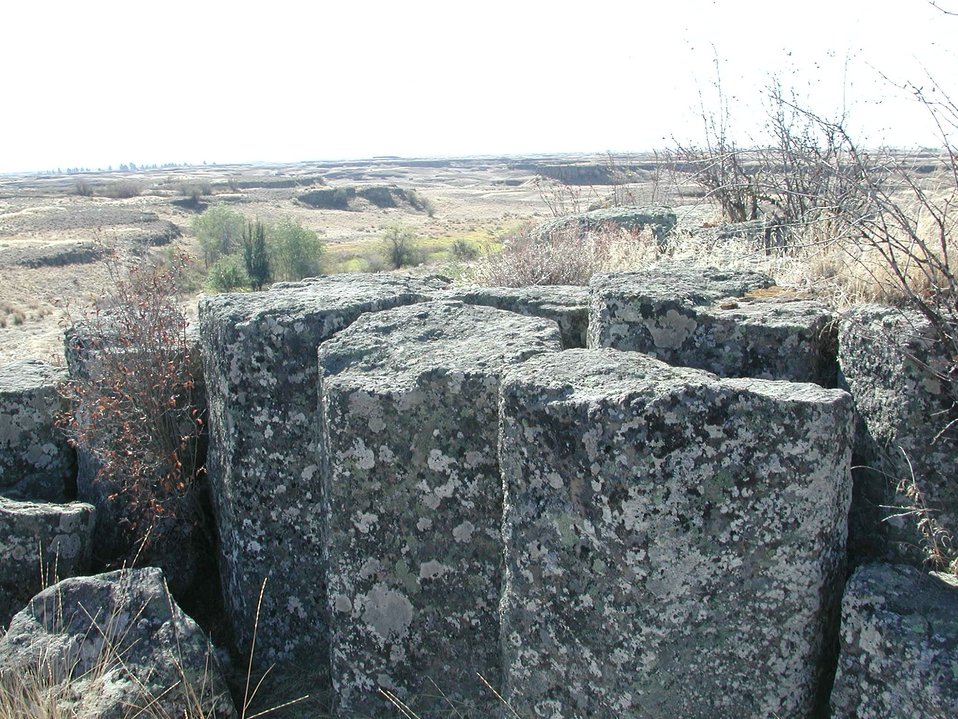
View of typical hexagonal cooling fracture pattern of the columnar basalt looking south across the flood channels.